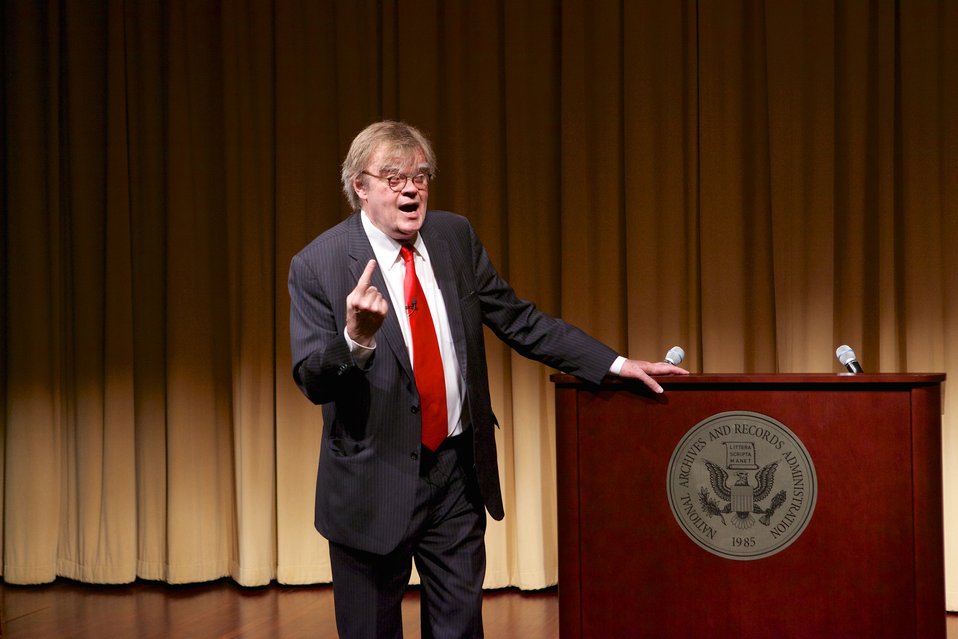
The Keillor Reader